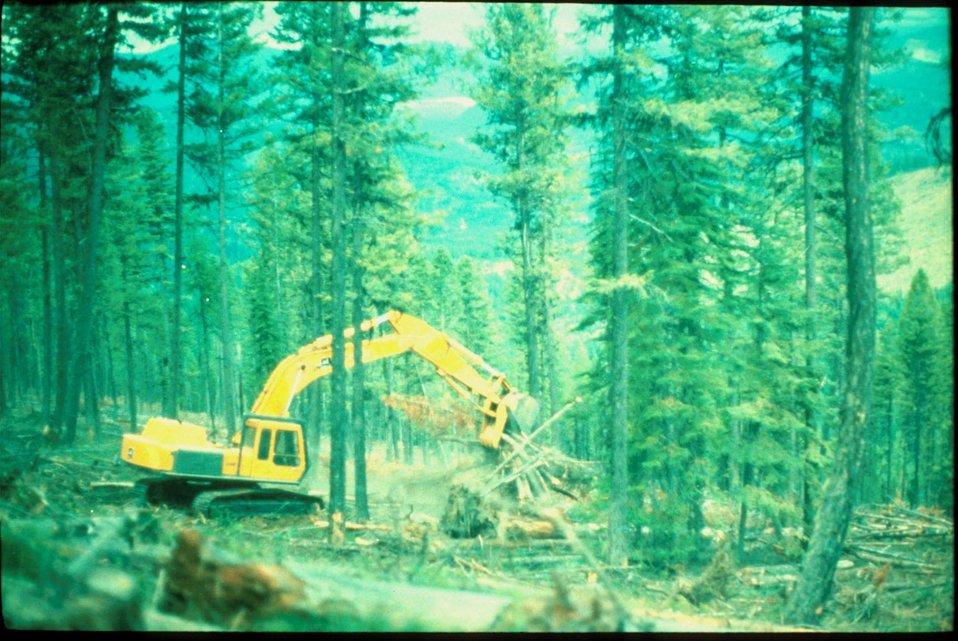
Slashbuster Upper Snake River District